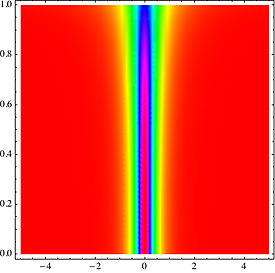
Soliton; Ultracold Gases; Quantum Wave

A newly predicted 'immortal' soliton. The horizontal axis depicts the width of the soliton wavefronts (bounded by yellow in the left panel and purple on the right panel, with different colors representing different wave heights). The vertical axis corresponds to the speed of the soliton as a fraction of the velocity of sound. The immortal soliton on the left maintains its shape right up to the sound barrier.

Credit: I. Satija et al., JQI